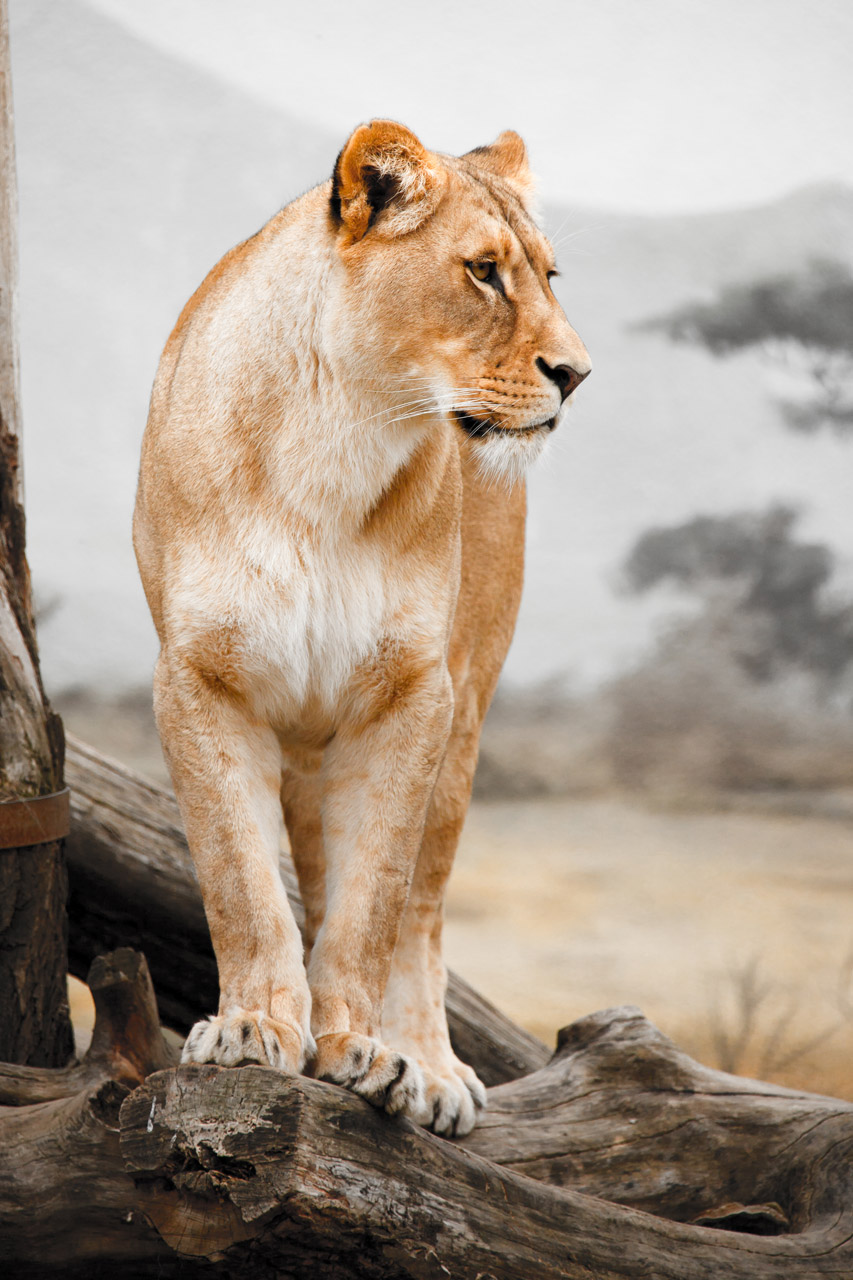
Lioness profile in unusual colors.